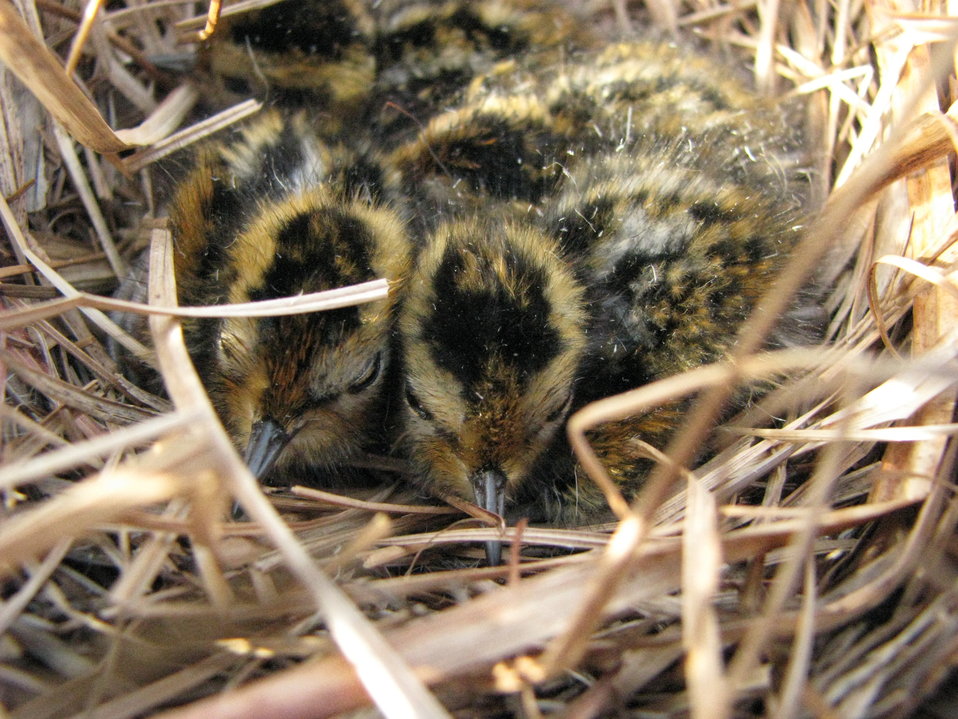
Phalarope chick close-up

Yukon Delta NWR